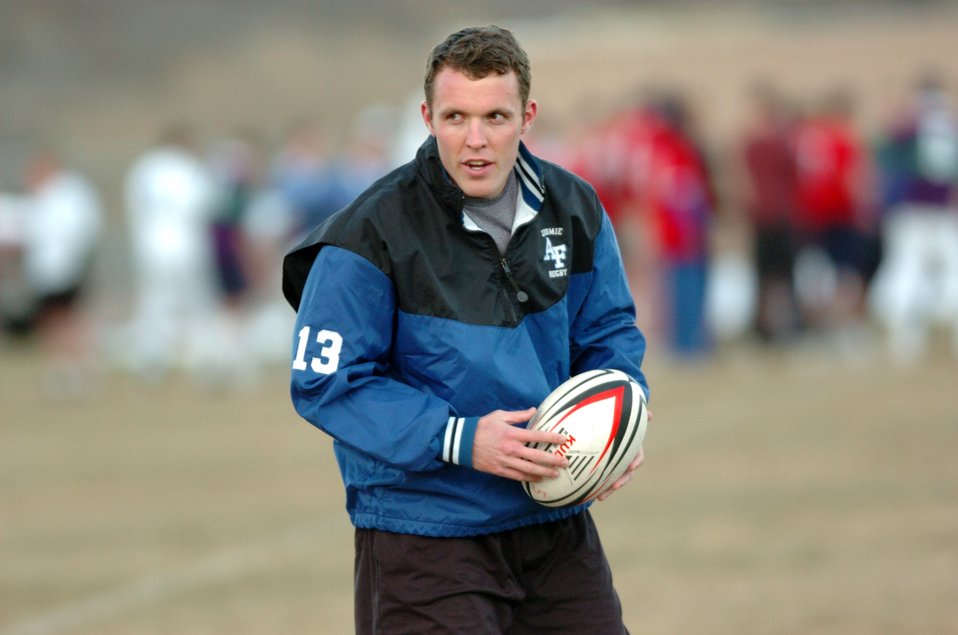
Injured cadet rugby player returns to field as a coach

Cadet 2nd Class Marc Ward suffered a debilitating injury during a rugby game in 2003 in a game against the University of California at Berkeley. He lost full use of his right arm for six months, but has since made a full recovery and now coaches as part of the academy rugby team.